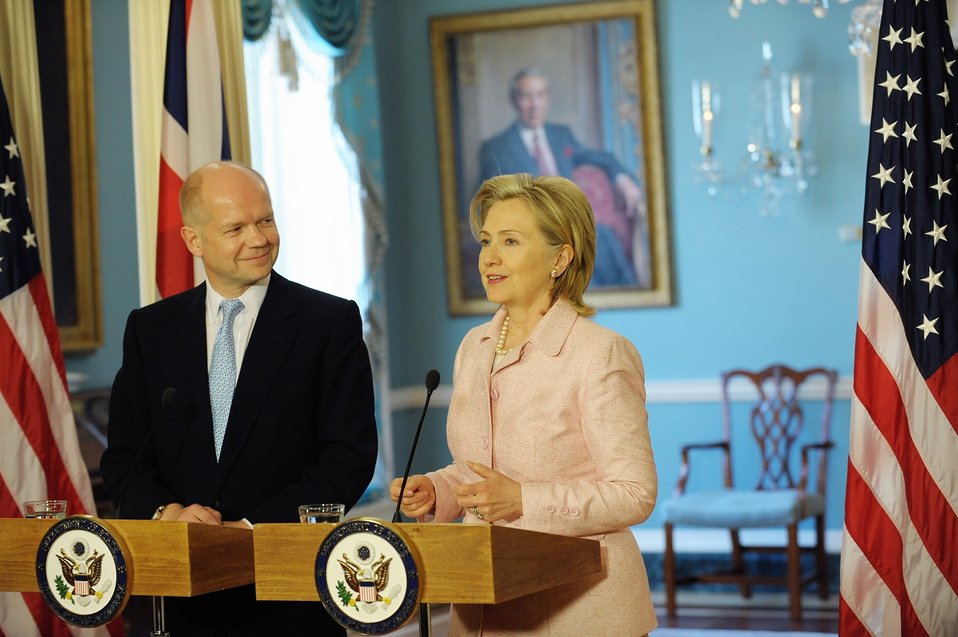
Secretary Clinton Meets With British Foreign Secretary William Hague

U.S. Secretary of State Hillary Rodham Clinton meets with British Foreign Secretary William Hague in the Treaty Room at the U.S. Department of State, Washington, D.C., May 14, 2010.